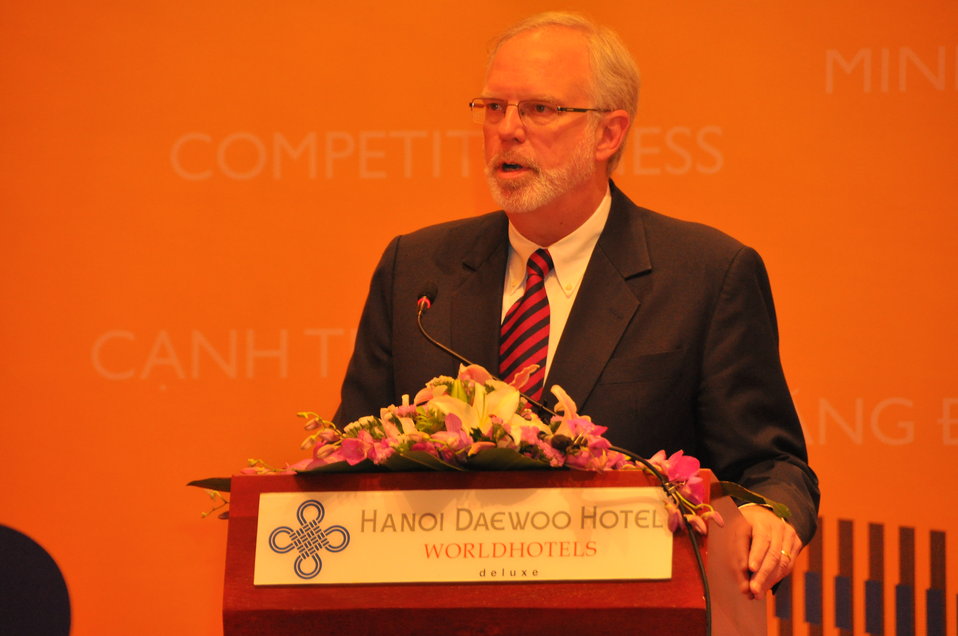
U.S. Ambassador David Shear speaks at the Provincial Competitiveness Index Launch, March 14, 2013

Hanoi, March 14, 2013